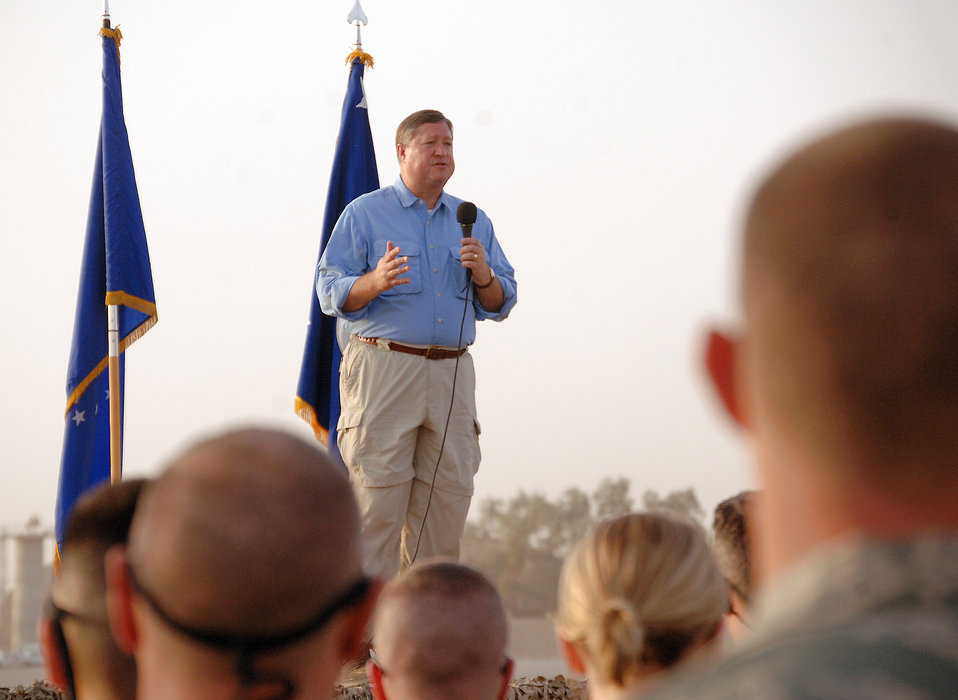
Secretary tours Joint Base Balad, shares Air Force vision

Secretary of the Air Force Michael B. Donley speaks at a Airmen's Call during an Oct. 13 visit to Joint Base Balad, Iraq.